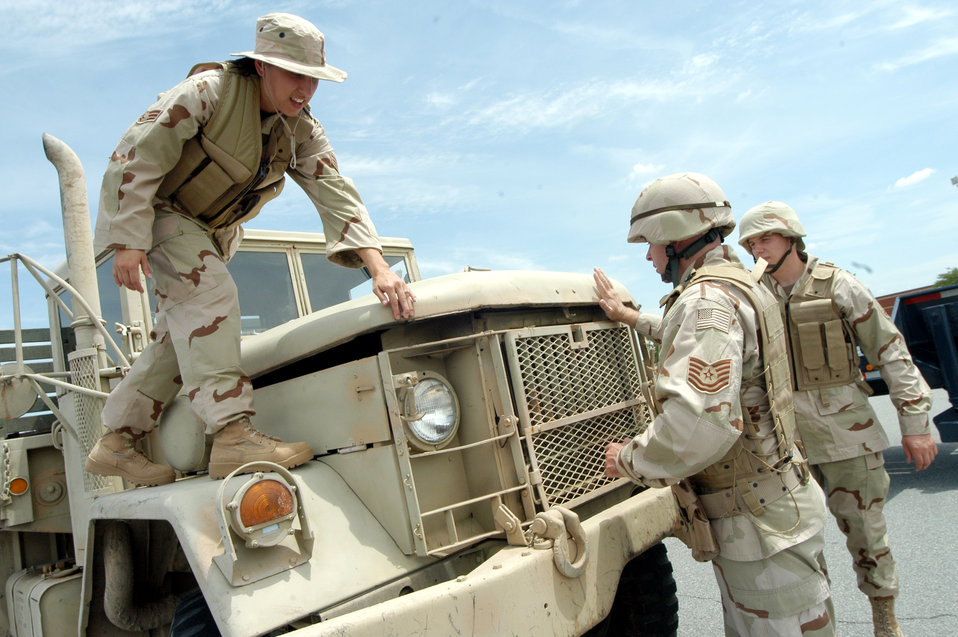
Pop the hood

ROBINS AIR FORCE BASE, Ga. -- (From left) Senior Airman Ellen Crytzer, Tech. Sgt. Andre Killkelley and Airman 1st Class Jacob Kaminski prepare to check under the hood of a 5-ton truck here. The Airmen are assigned to the 78th Logistics Readiness Squadron and are preparing to deploy to Iraq.